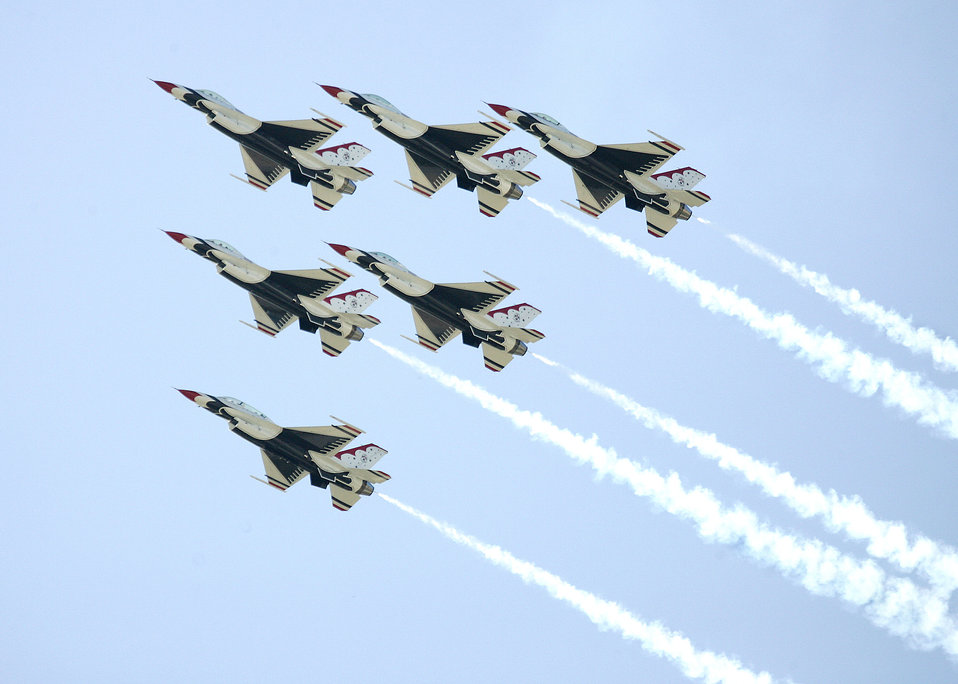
Thunderbirds release 2007 show schedule

The U. S. Air Force Demonstration Squadron,